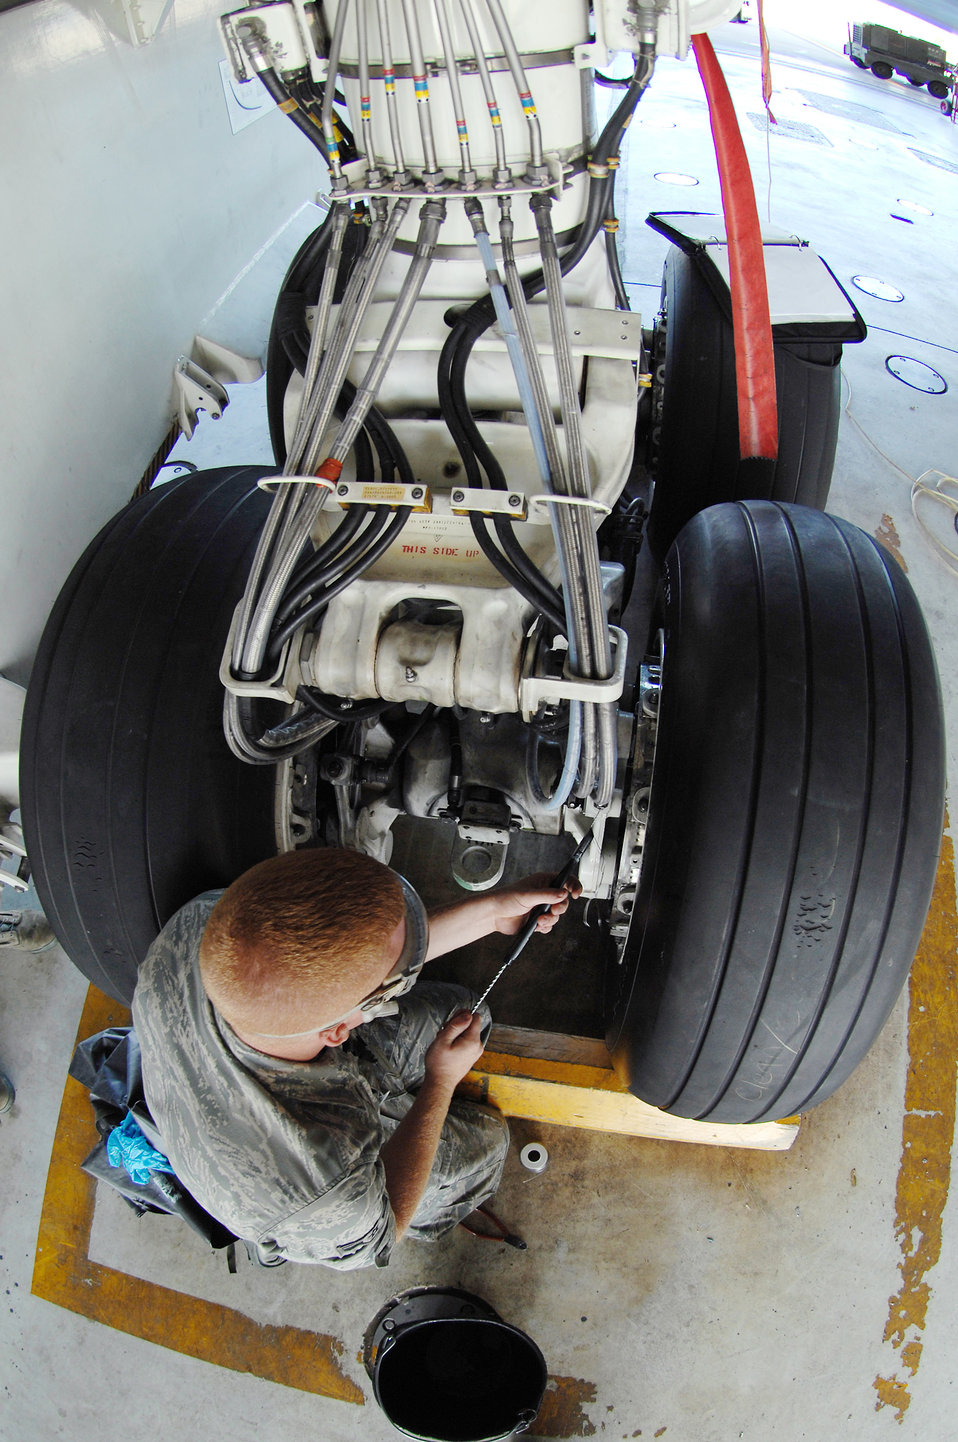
Ready for takeoff

Airman 1st Class Benjamin Feldkamp works on the brakes on a B-2 Spirit Aug. 22 at Whiteman Air Force Base, Mo. Airman Feldkamp and other 509th Aircraft Maintenance Squadron crew chiefs work around the clock to ensure the B-2 is mission ready at all times.